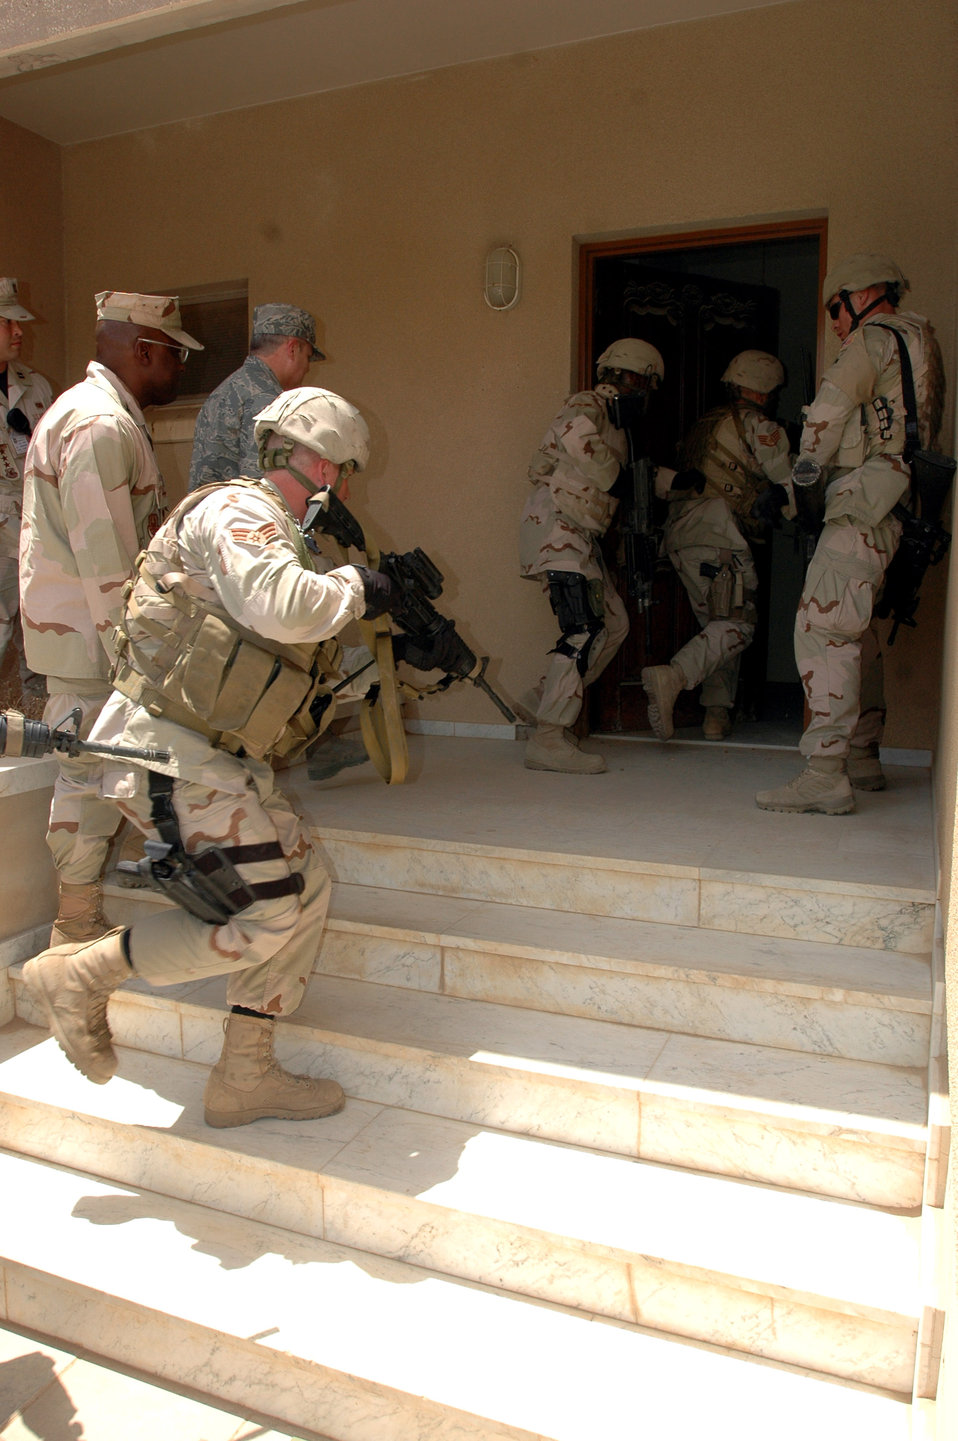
'300' Airmen provide world-class base defense

Security forces Airmen with the 64th Air Expeditionary Group demonstrate how to infiltrate a house in an urban environment Aug. 20 at a foward deployed location in Southwest Aisa.